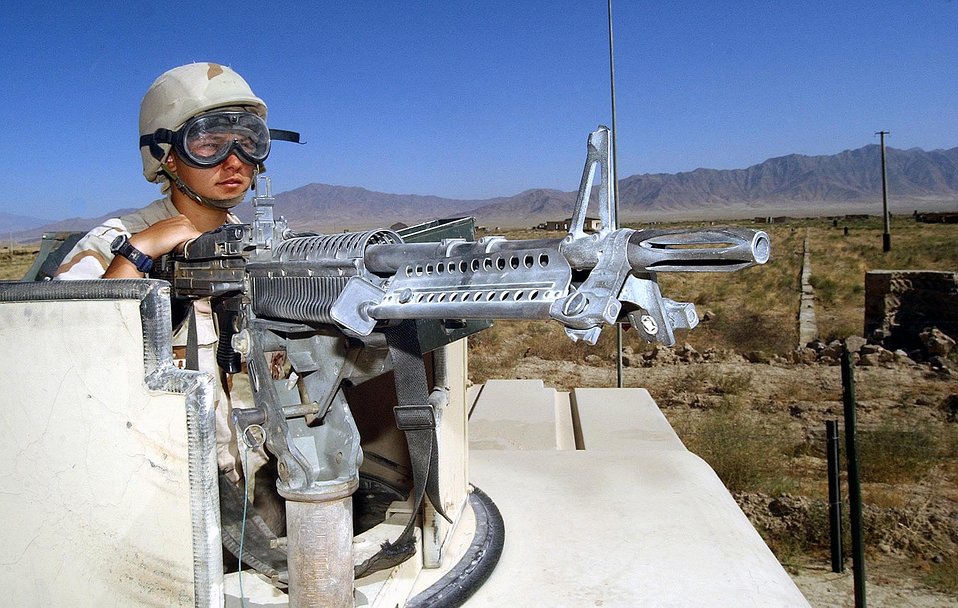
Scanning the horizon

BAGRAM AIR BASE, Afghanistan -- Senior Airman Jodi Brown, 455th Expeditionary Security Forces Squadron M-60 machine gun operator, scans the horizon on a random perimeter check here. Hostile encounters are likely on the edge of the base. Air Force security forces work with the Army to secure the base.